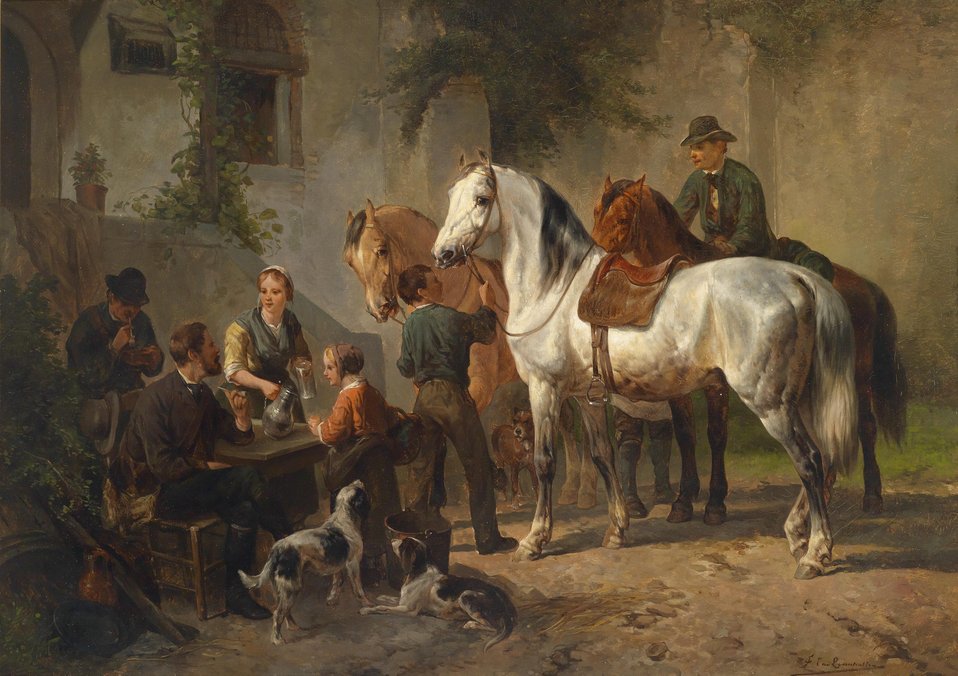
Rast in der Schenke, signiert F. van Leemputten, Öl auf Leinwand, 50,5 x 70 cm